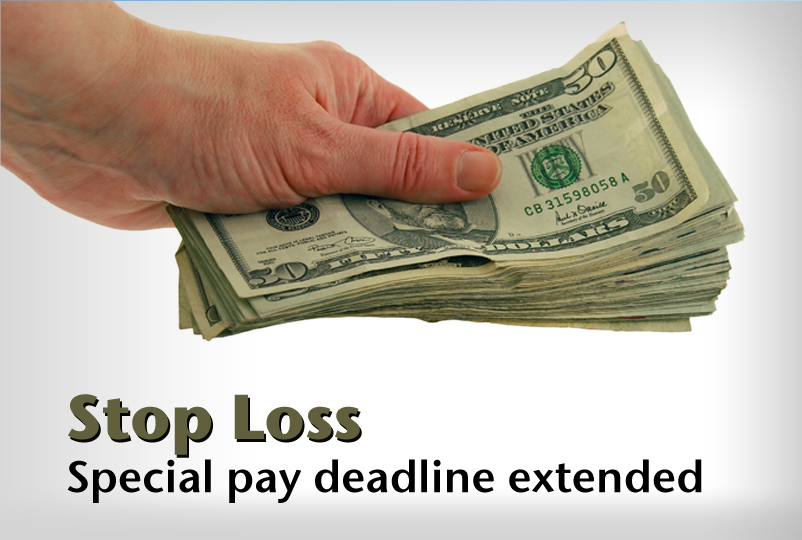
President extends deadline for stop loss benefit